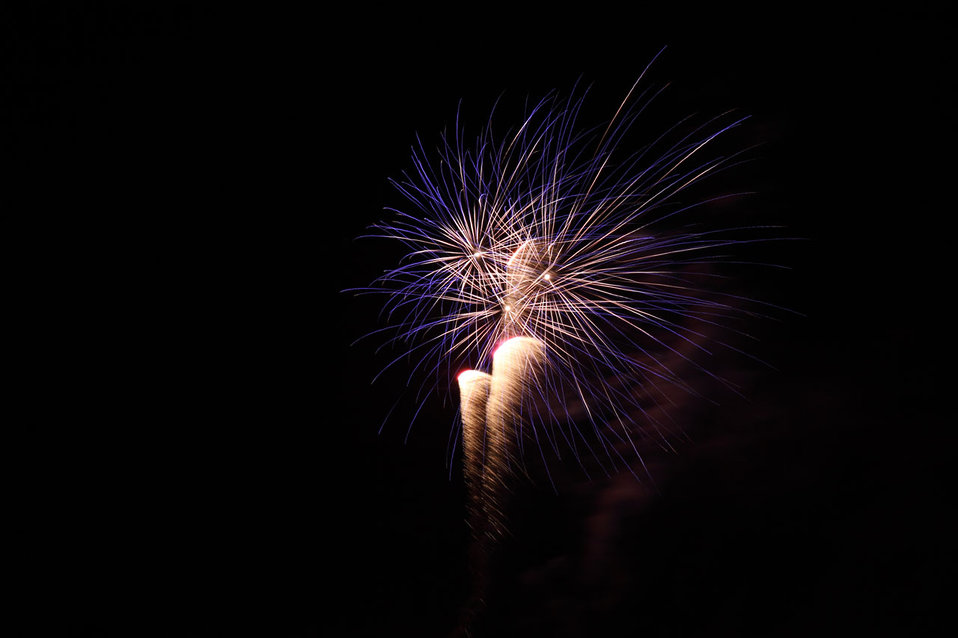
Fireworks on bonfire night.